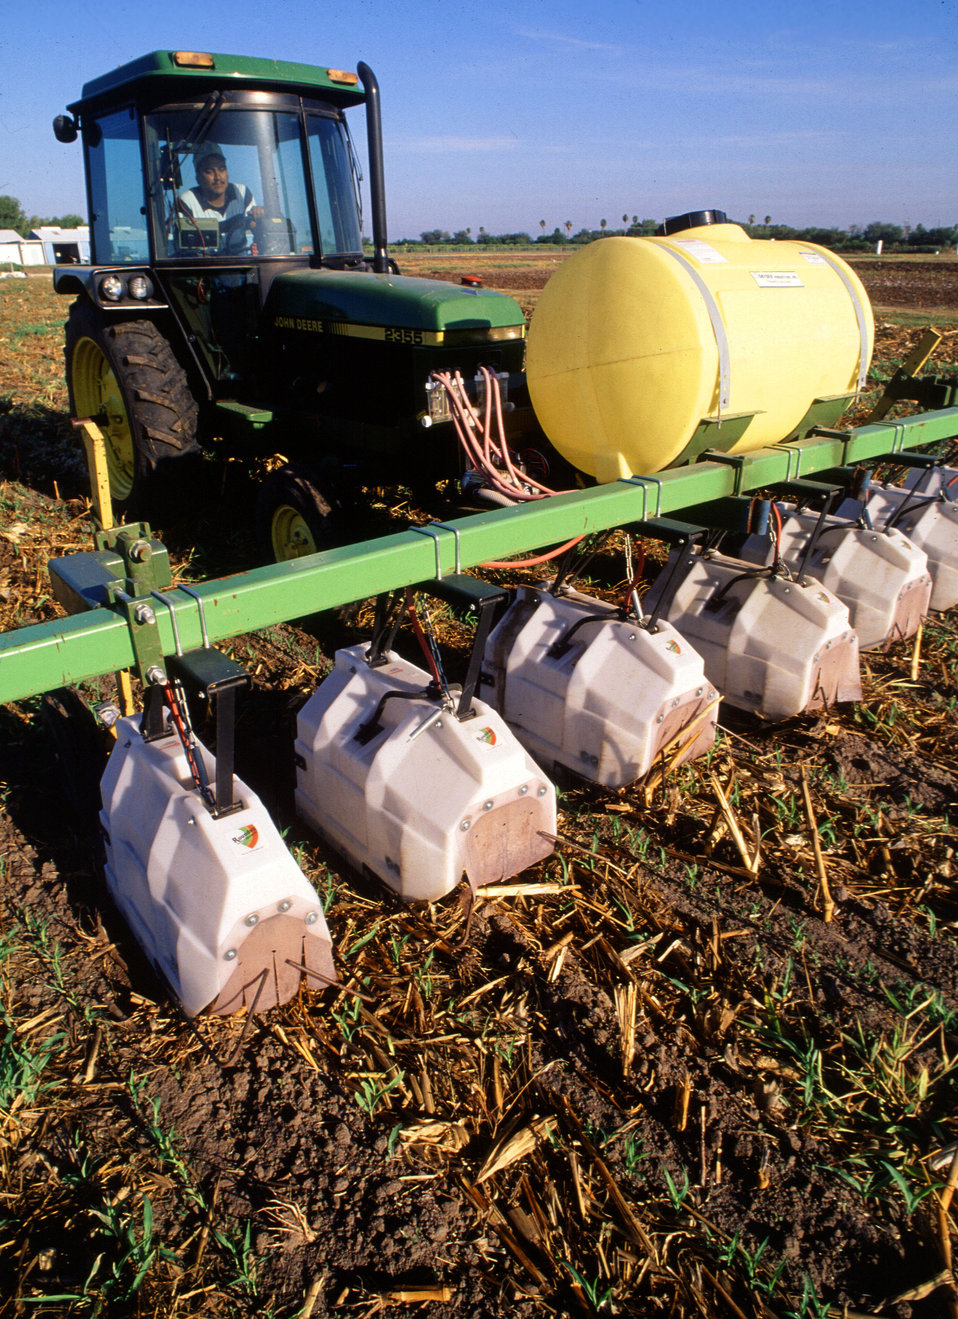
Hooded sprayers operated by U.S. Department of Agriculture (USDA) Agricultural Research Service (ARS) field technician Victor Valladares direct herbicide just to areas between rows of grain sorghum.